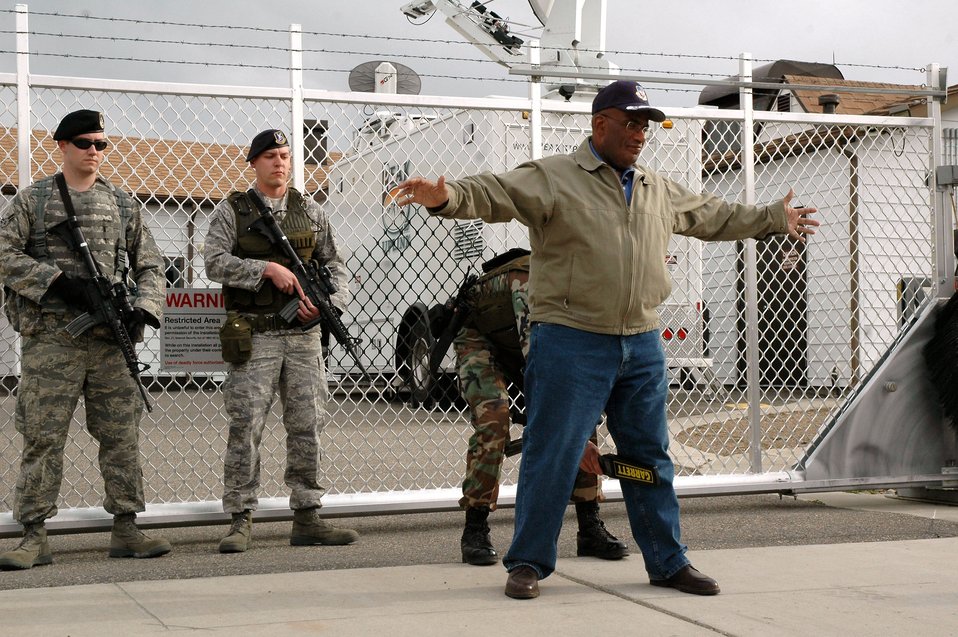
Today Show features Malmstrom Airmen, mission

Al Roker, NBC's Today Show co-host, gets searched by a security controller before entering a missile alert facility May 5 near Malmstrom Air Force Base, Mont. Mr. Roker was preparing to broadcast live from the area May 6 as part of their